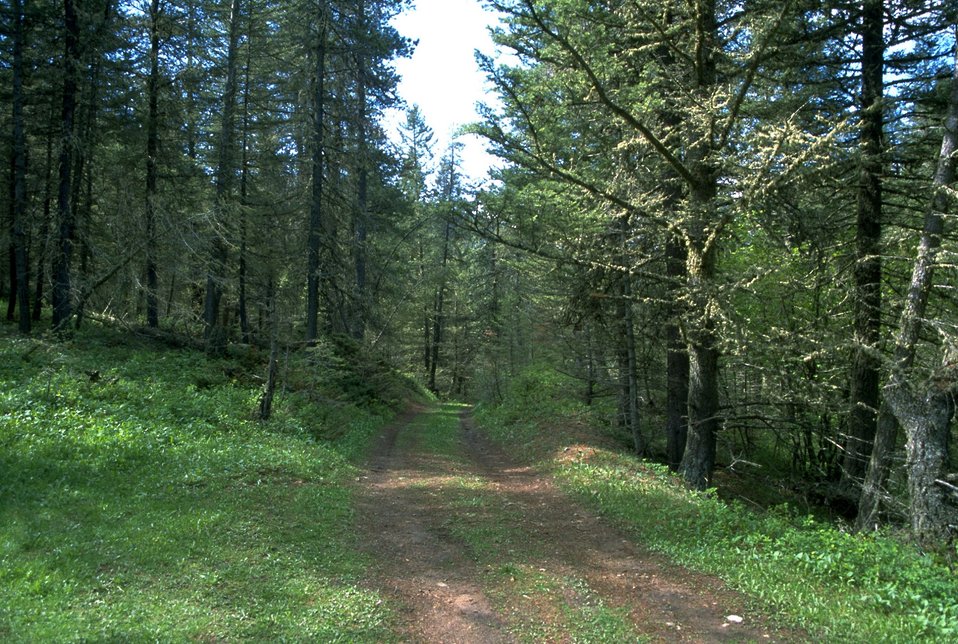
Road into LimeKiln Canyon in the Judith Mountains